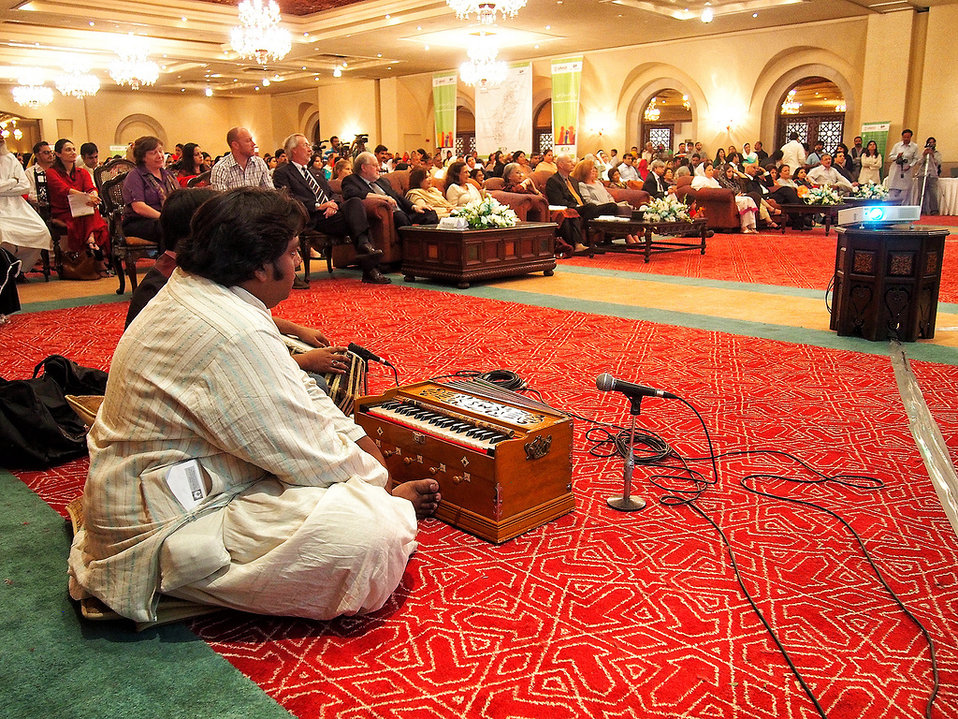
Gender Equity Program, Pakistan

USAID and Aurat Foundation annual event in Islamabad, Sept. 20, 2013